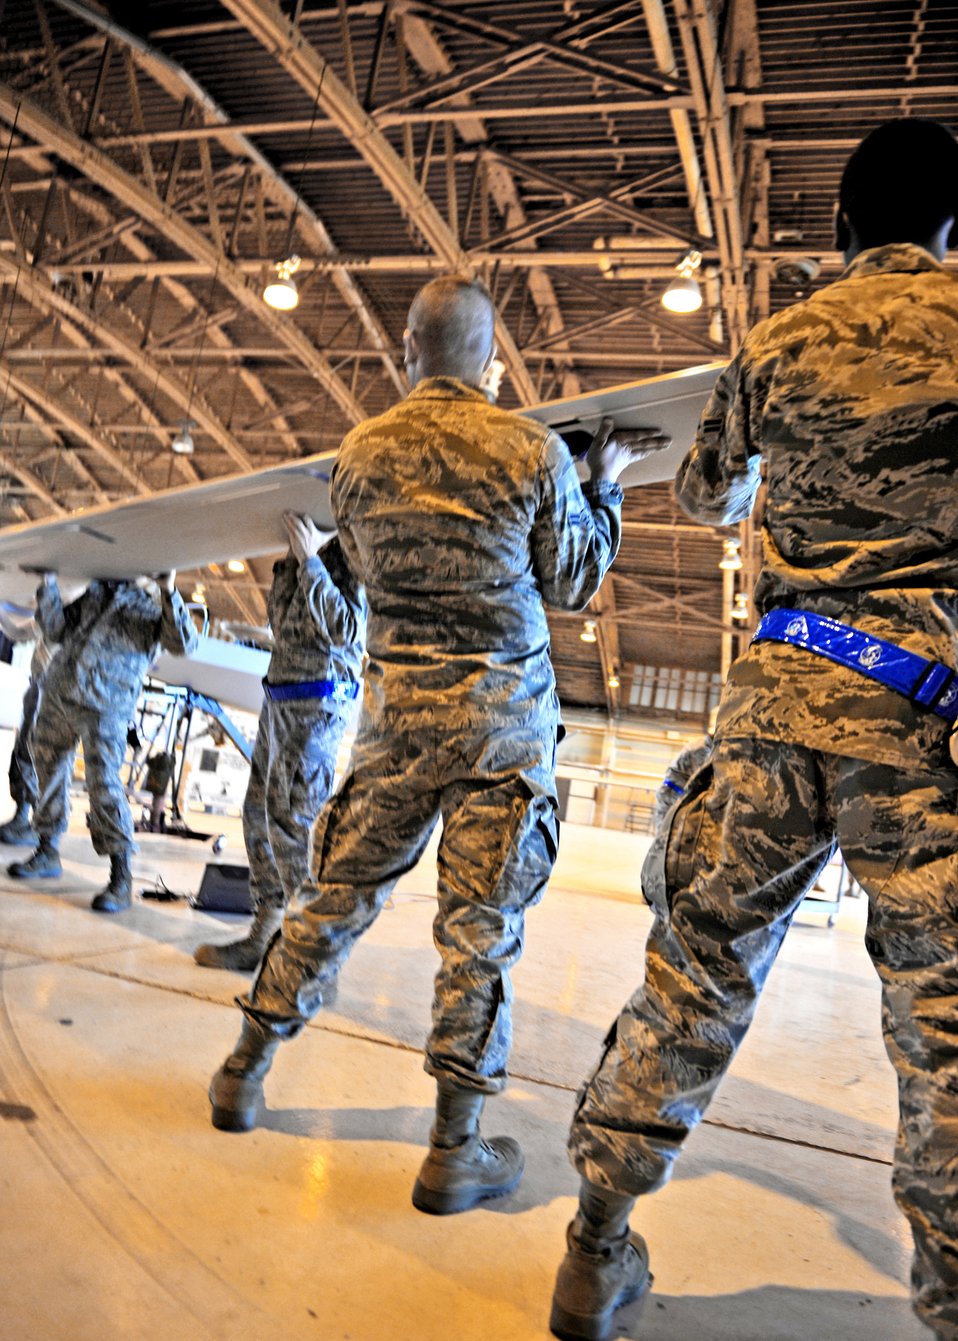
849th AMXS provides eyes in the sky of Haiti

Airmen from the 849th Aircraft Maintenance Squadron remove the right wing of an MQ-1 Predator, Jan. 17, 2010, at Holloman Air Force Base, N.M. The Airmen dissembled and packaged a Predator for departure in support of Operation Unified Response.